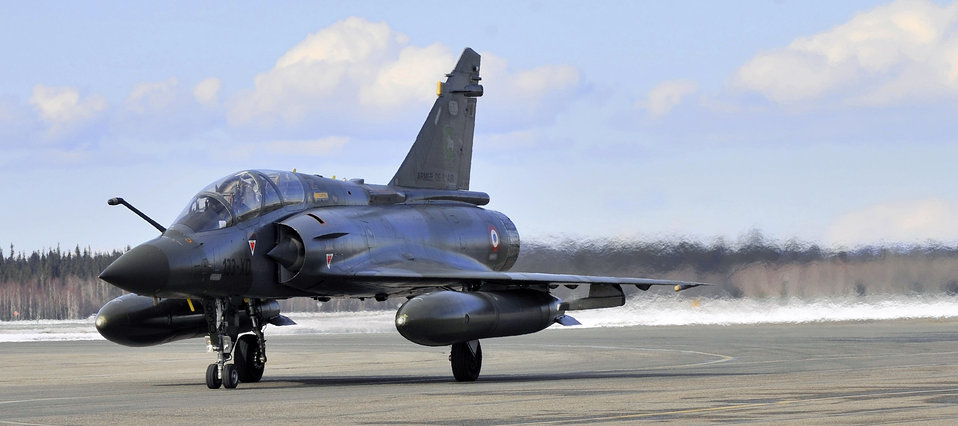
French air forces arrive for Red Flag-Alaska

A Mirage 2000 fighter from Luxeuil Air Base, France, taxis to a parking spot April 14 at Eielson Air Force Base, Alaska. Realistic combat training, such as that during a Red Flag-Alaska exercise, is vital to the success of air and space operations.